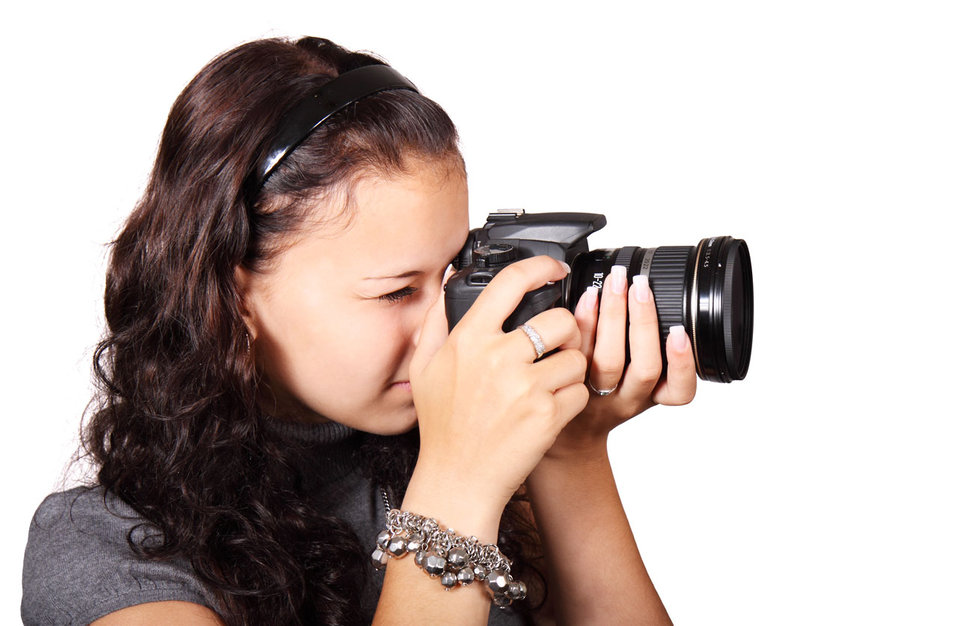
Teenage photographer

Young female photographer using digital slr.